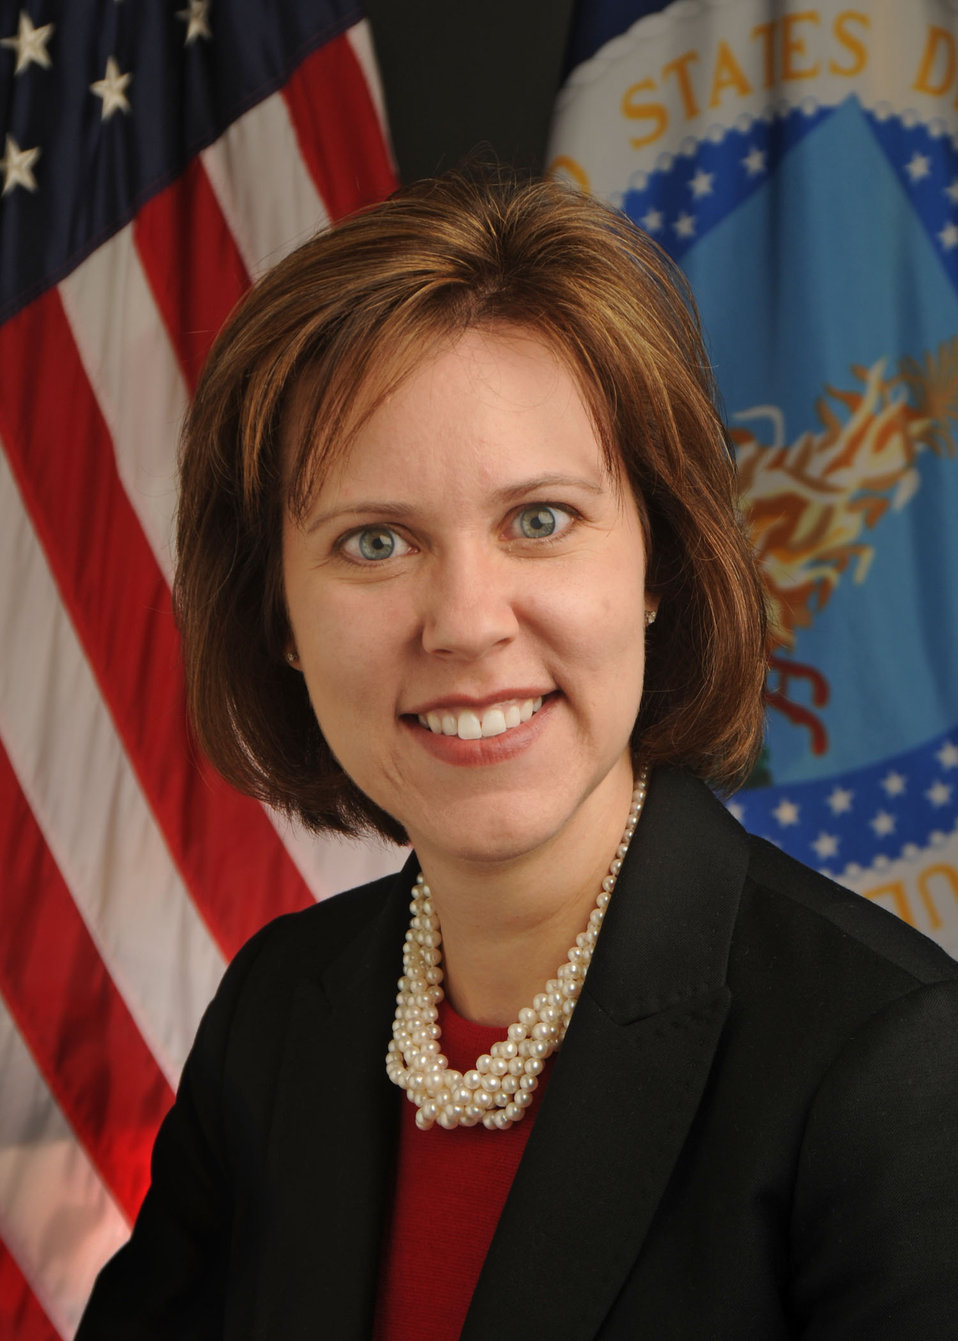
10di1040-014 Deputy Under Secretary Farm and Foreign Agricultural Services Darci Vetter

Deputy Under Secretary Farm and Foreign Agricultural Services Darci Vetter.